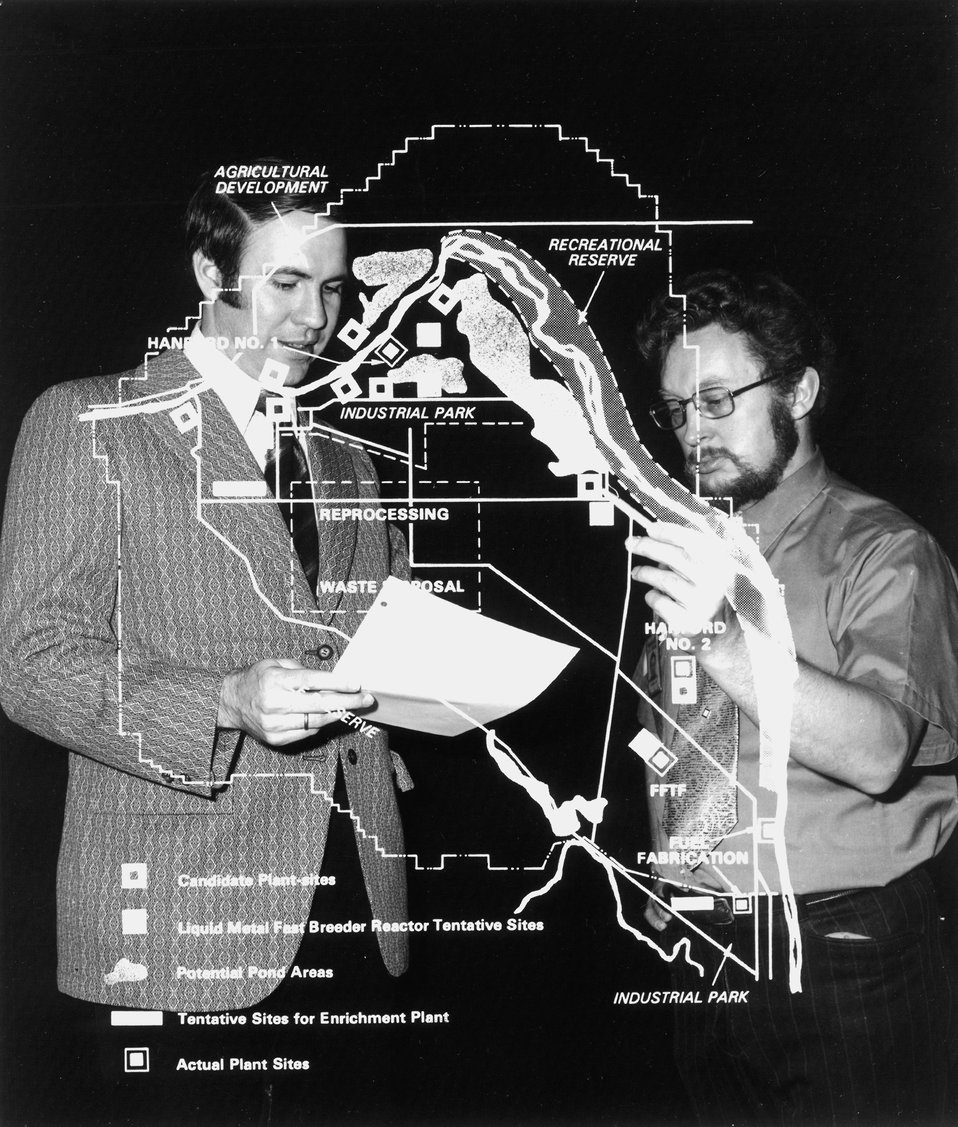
Regional energy center developments have been studied by scientists at the AEC's Pacific Northwest Laboratory. c. undated